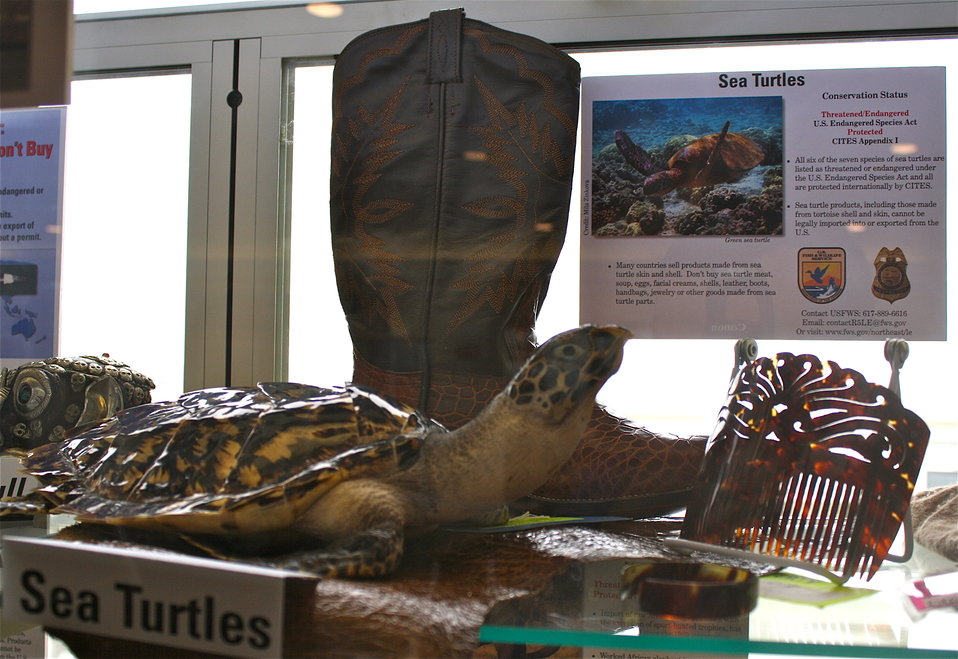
Sea Turtle Souvenirs